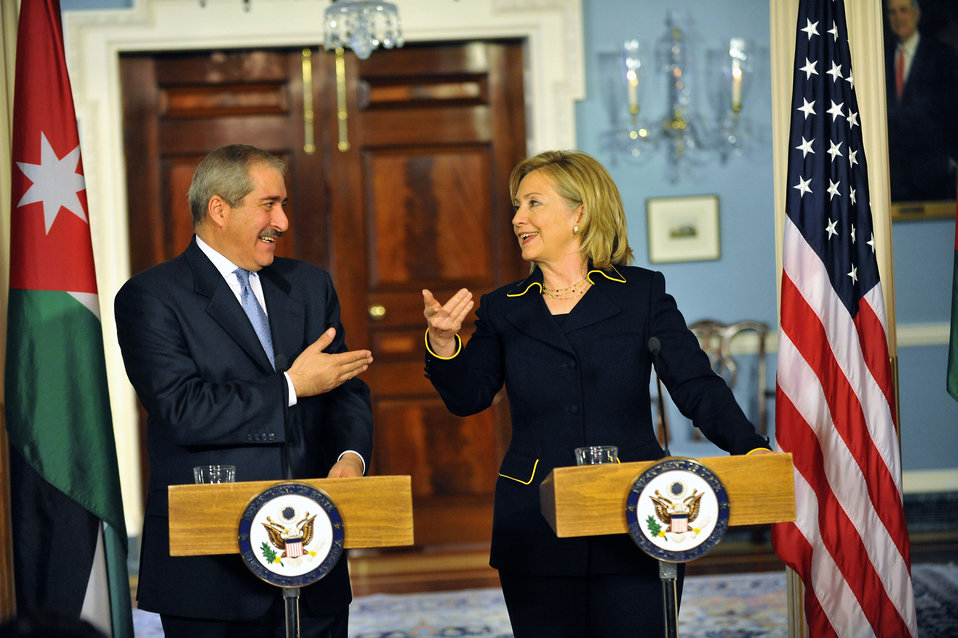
Secretary Clinton and Jordanian Foreign Minister Judeh Deliver Remarks

U.S. Secretary of State Hillary Rodham Clinton and Jordanian Foreign Minister Nasser Judeh deliver remarks in a joint press conference at the U.S. Department of State in Washington, D.C., on January 26, 2011.